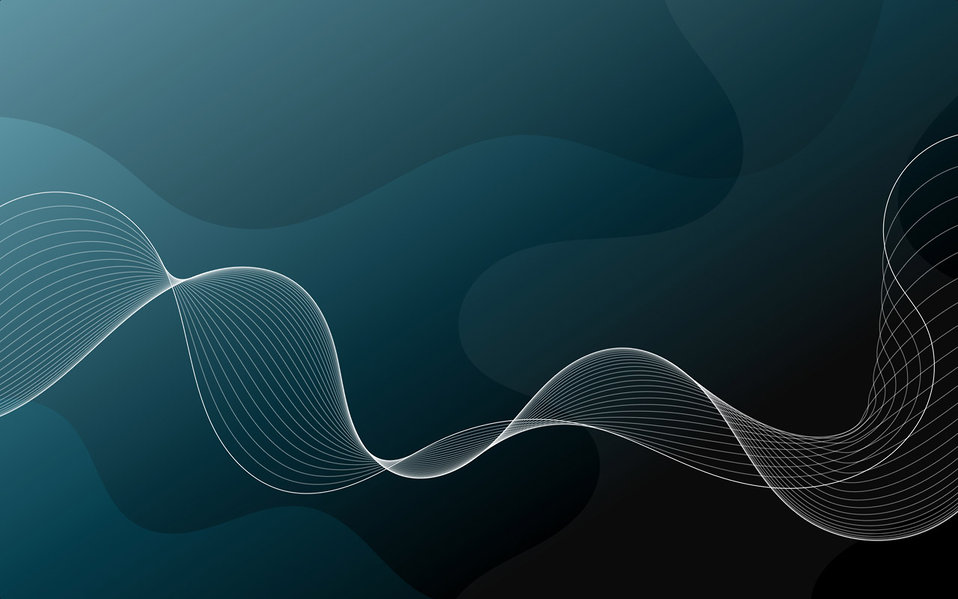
Teal curve background

A teal colored curve background..